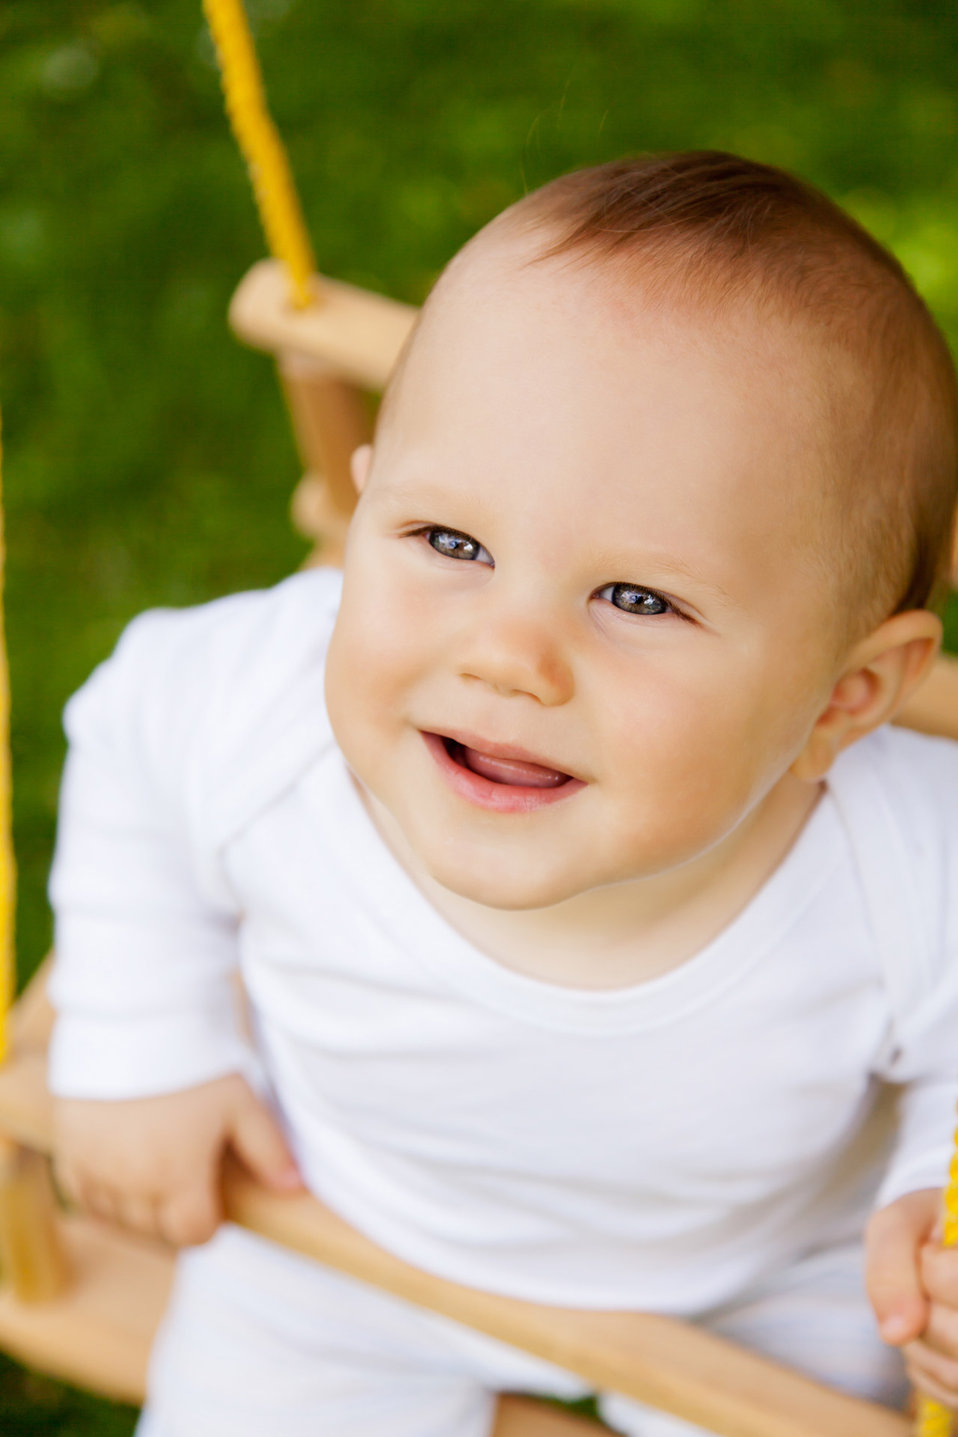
Baby on a swing

Young baby boy on a swing in a park.